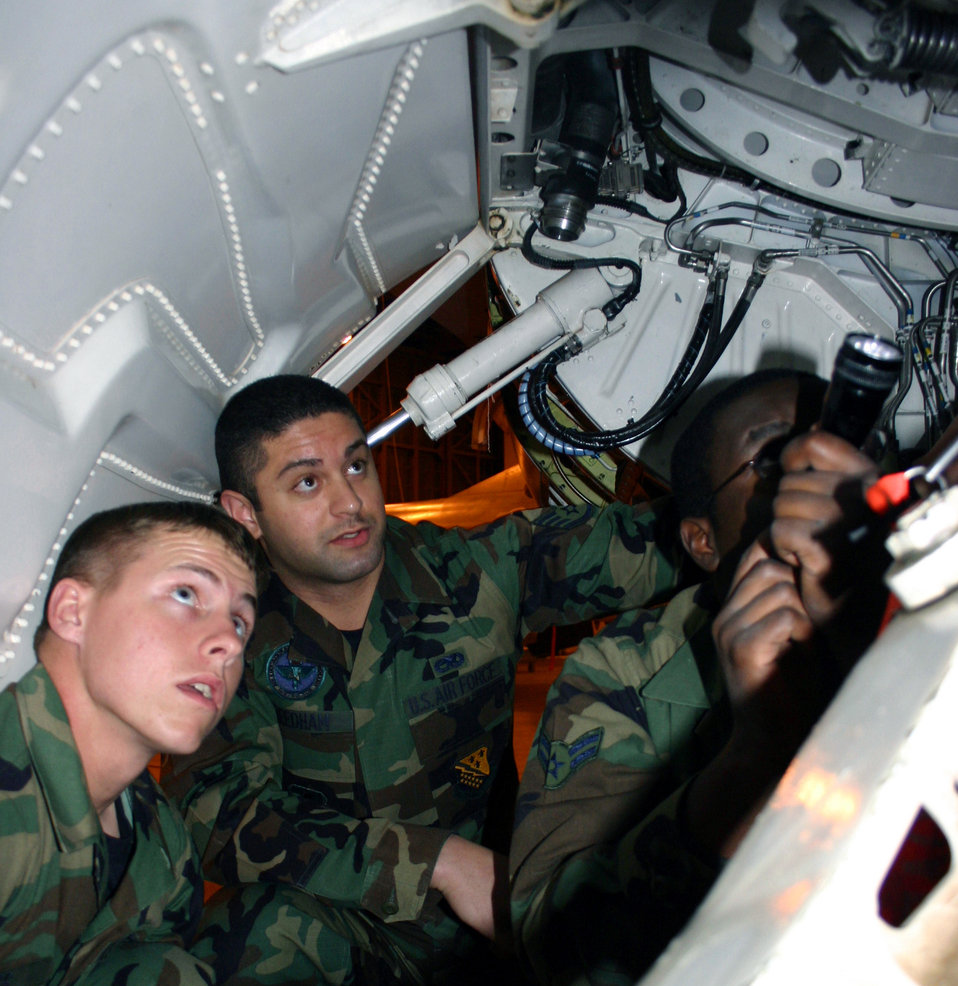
Pop quiz

SHEPPARD AIR FORCE BASE, Texas -- Staff Sgt. Kalaeone Needham (center) has students Airman Ryan Ross (left) and Airman 1st Class Sakawa Ogega point out F-16 Fighting Falcon parts during training here. Sergeant Kalaeone is an instructor in the 362nd Training Squadron and the 250,000th Community College of the Air Force graduate.